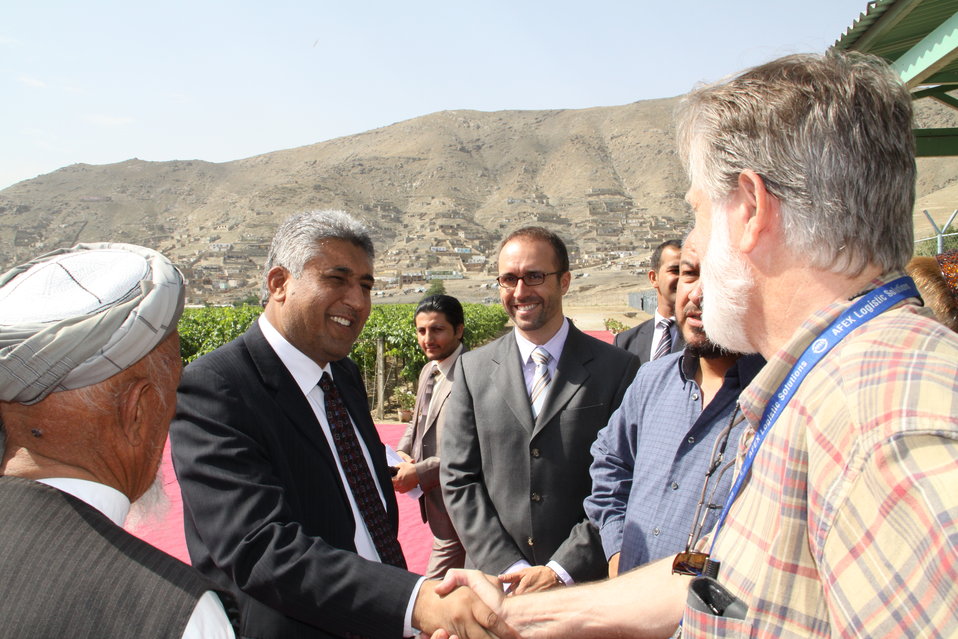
Badam Bagh Farm